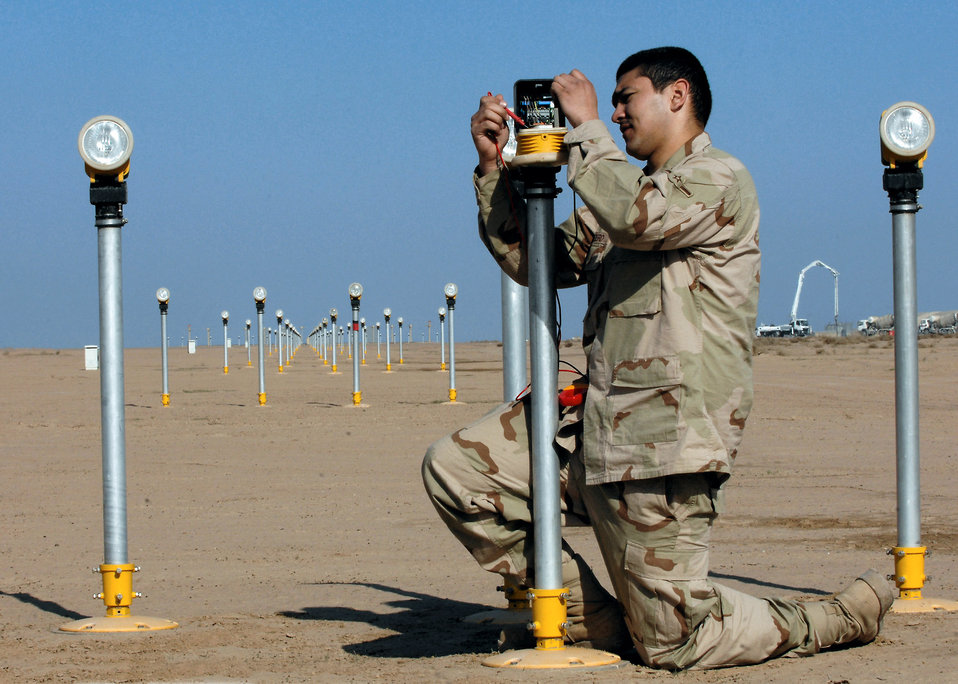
Let there be a guiding light

At Balad Air Base, Iraq, Airman Nicholas Wengerd repairs a strobe approach light Feb. 28. These lights guide pilots during landing operations in foggy weather. Airman Wengerd is a 332nd Expeditionary Civil Engineer Squadron electrician.